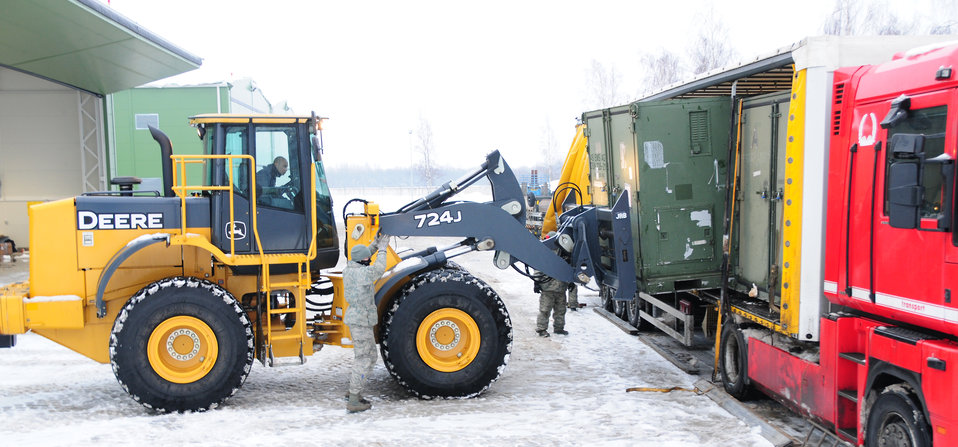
RAT helps 493rd EFS

Senior Airman Grant Cairel uses a forklift to load a container onto a trailer while being guided by Senior Airman Scott Knight Jan. 7, 2011, at Lithuania Air Base, Lithuania. Airman Cairel is a transportation management journeyman with the 493rd Expeditionary Fighter Squadron Redeployment Action Team. Airman Knight is an air transportation journeyman with the 493rd EFS RAT.